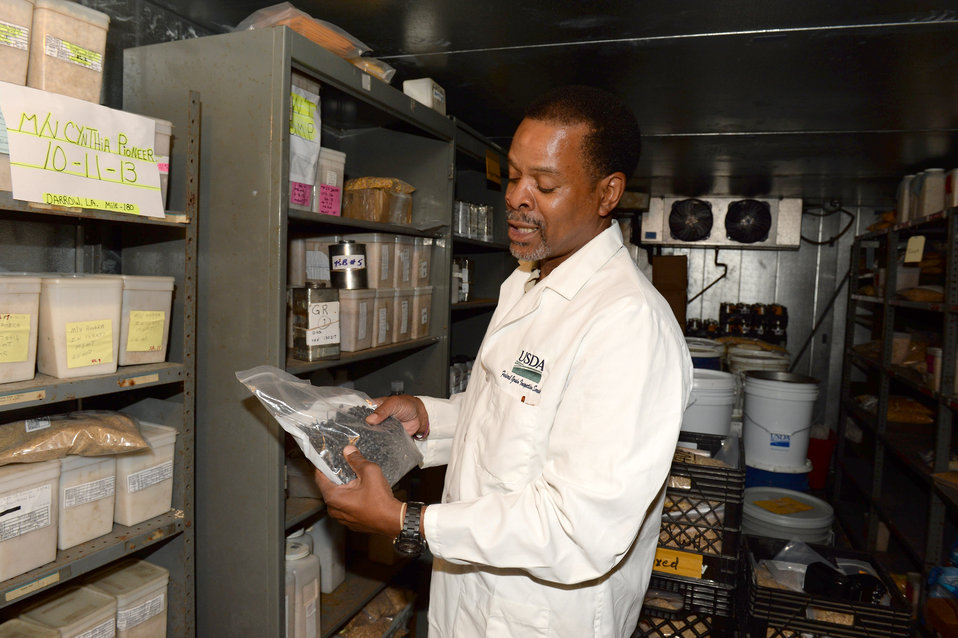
U.S. Department of Agriculture (USDA) Grain Inspection, Packers and Stockyards Administration (GIPSA) Federal Grain Inspection Service (FGIS) employee examine grain samples stored at the FGIS inspection laboratory in New Orleans, LA on Monday, Nov. 18, 2013.